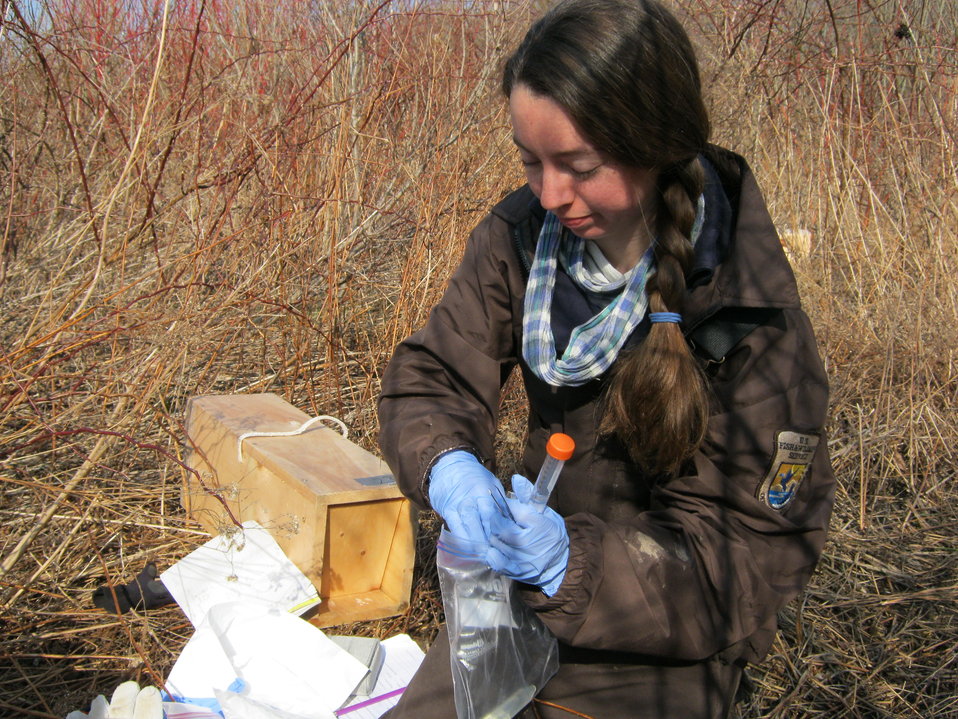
Finding New England cottontails

To better understand the current range of the New England cottontail, biologists look for signs of the rabbit.

The cottontail leaves fecal pellets that we can DNA test and they also leave evidence where they have browsed on vegetation. Another way to find where cottontails still exist on the landscape is through safely trapping them.